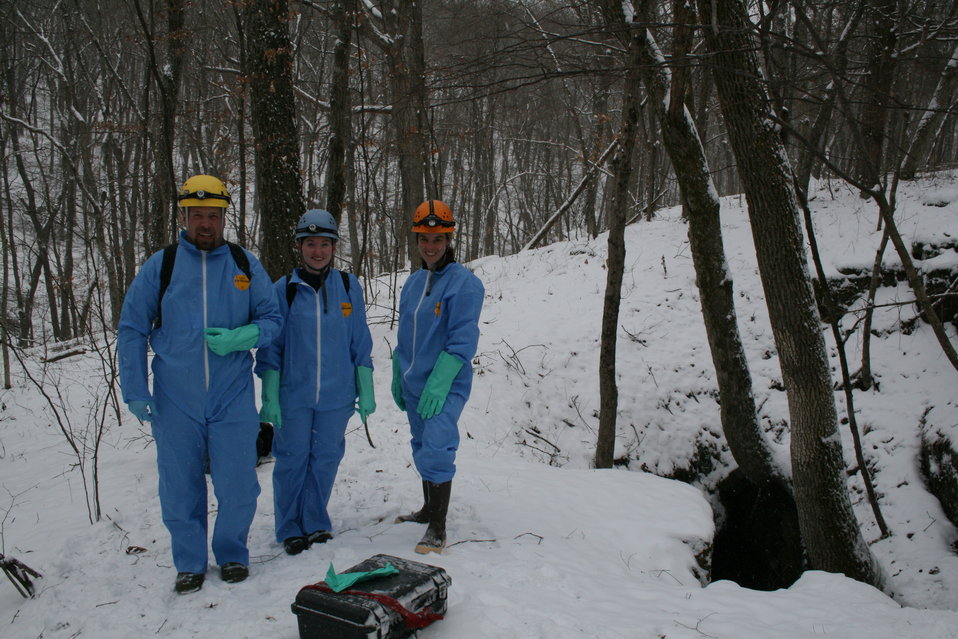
MDC biologists Tony Elliott and Shelly Colatskie and USFWS WNS staff Ann Froschauer prepare to enter site for survey